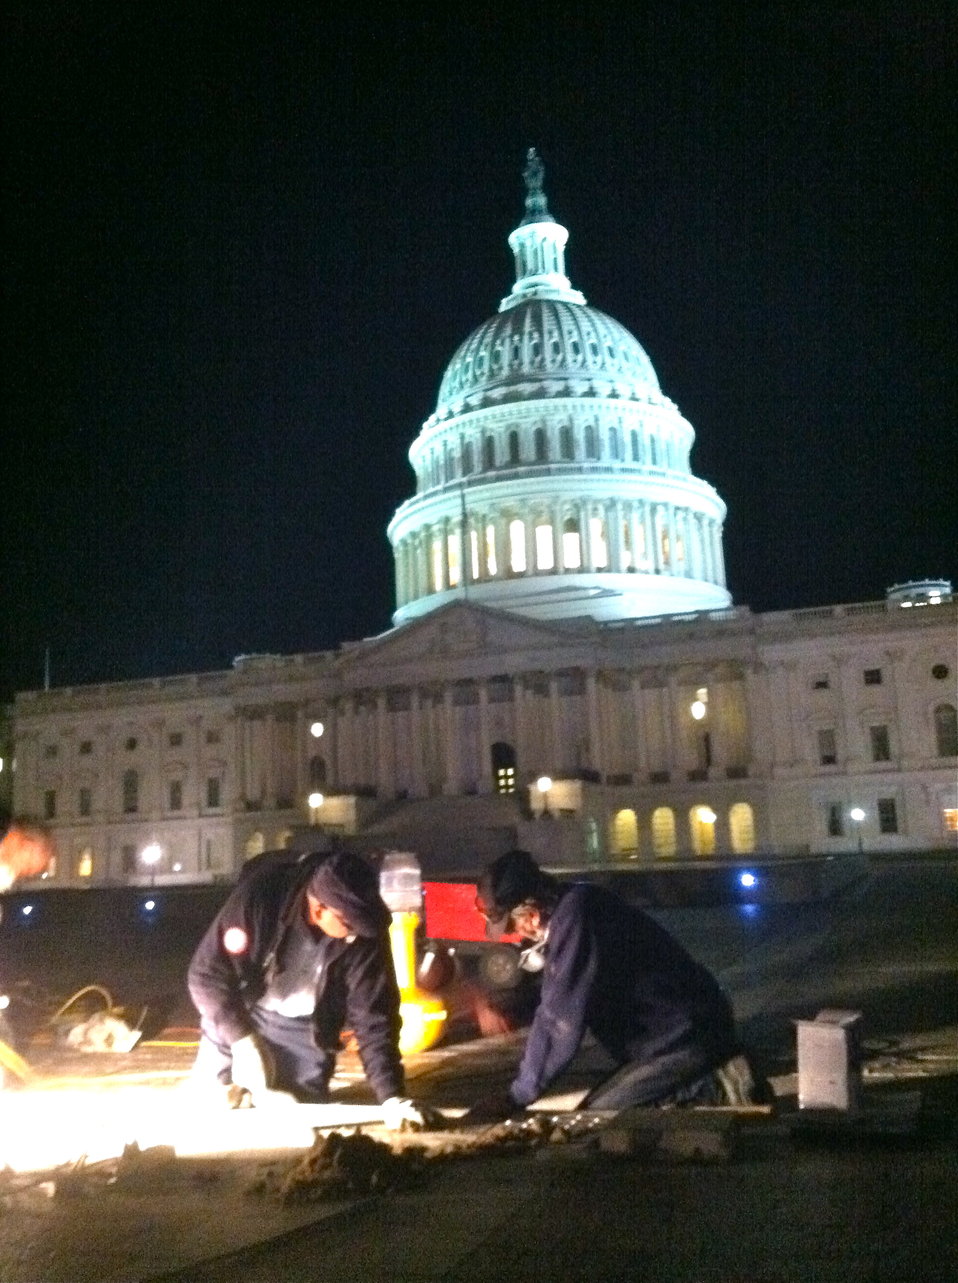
AOC stone masons